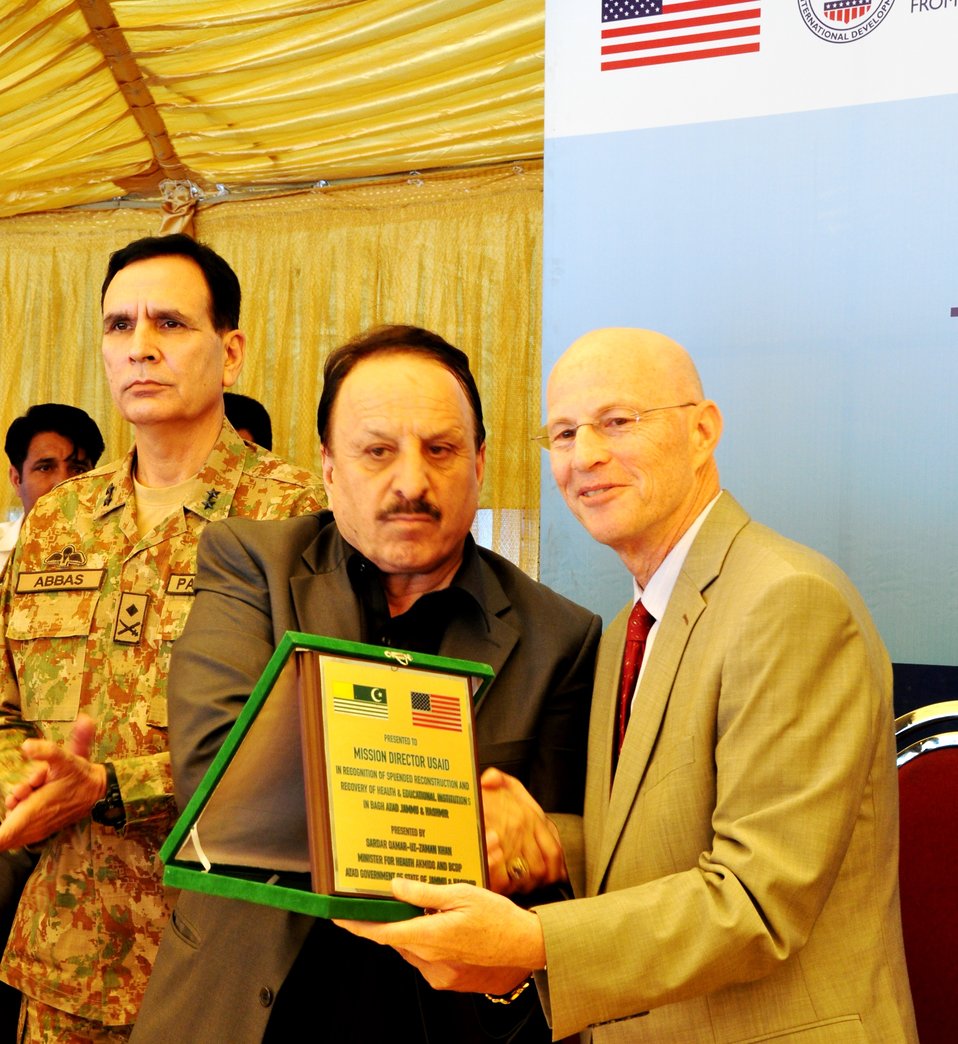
Bagh 05